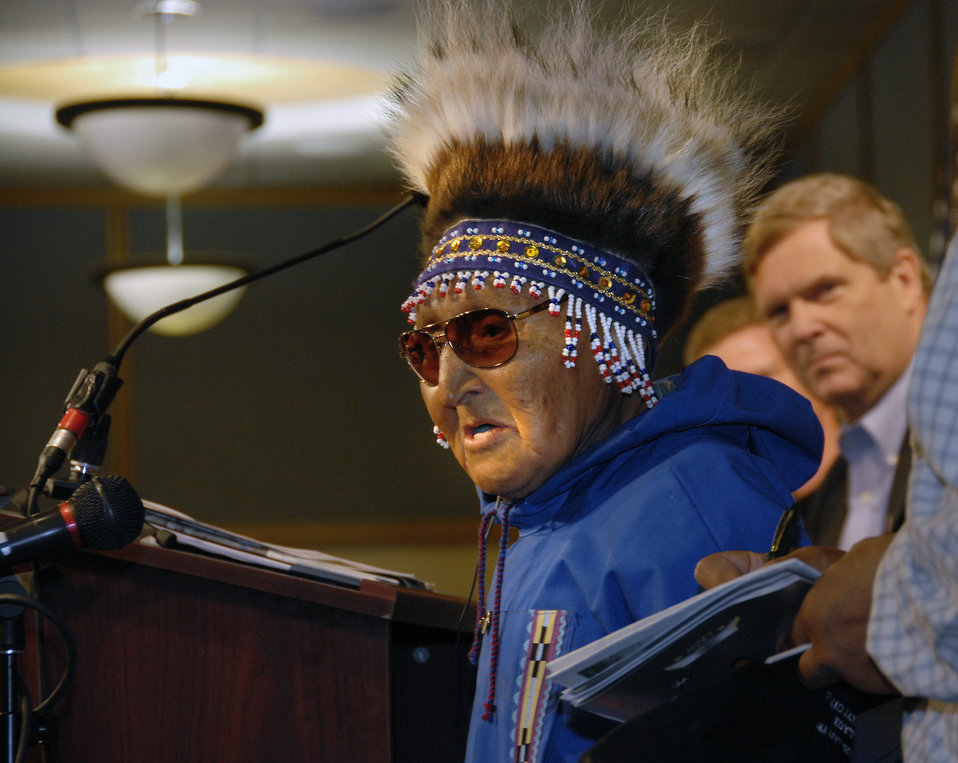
Rural Tour 0058

Rural Tour Alaska Aug 2009